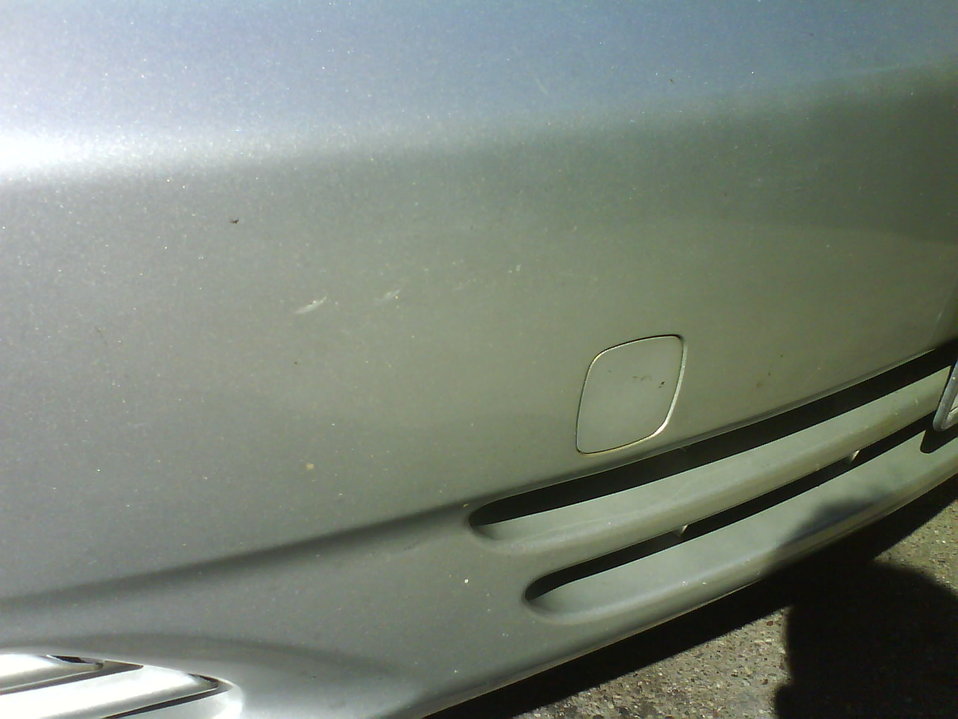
XV30 Toyota Camry tow hatch on front bumper, Japanese made North American version. Category:Toyota Camry XV30